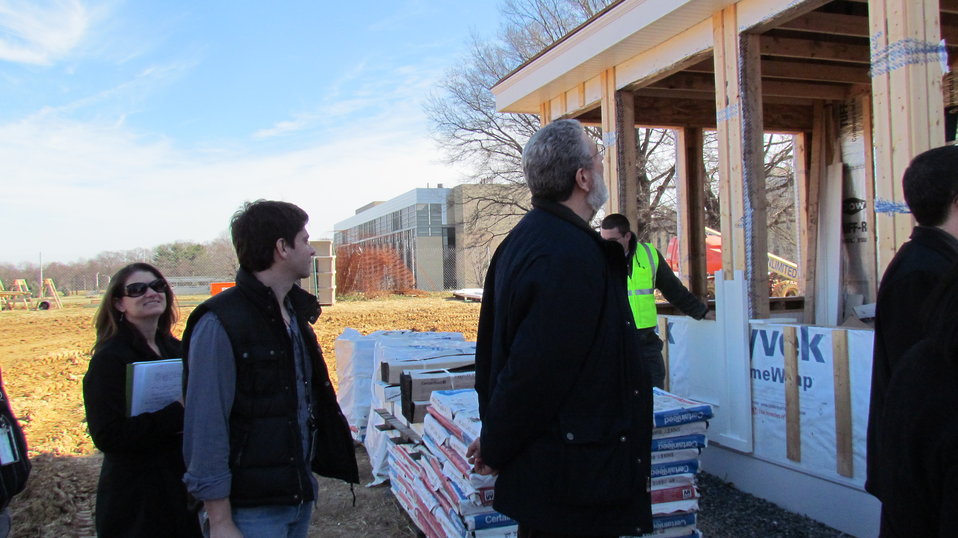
Members of NIST’s Public and Business Affairs Office touring construction site.